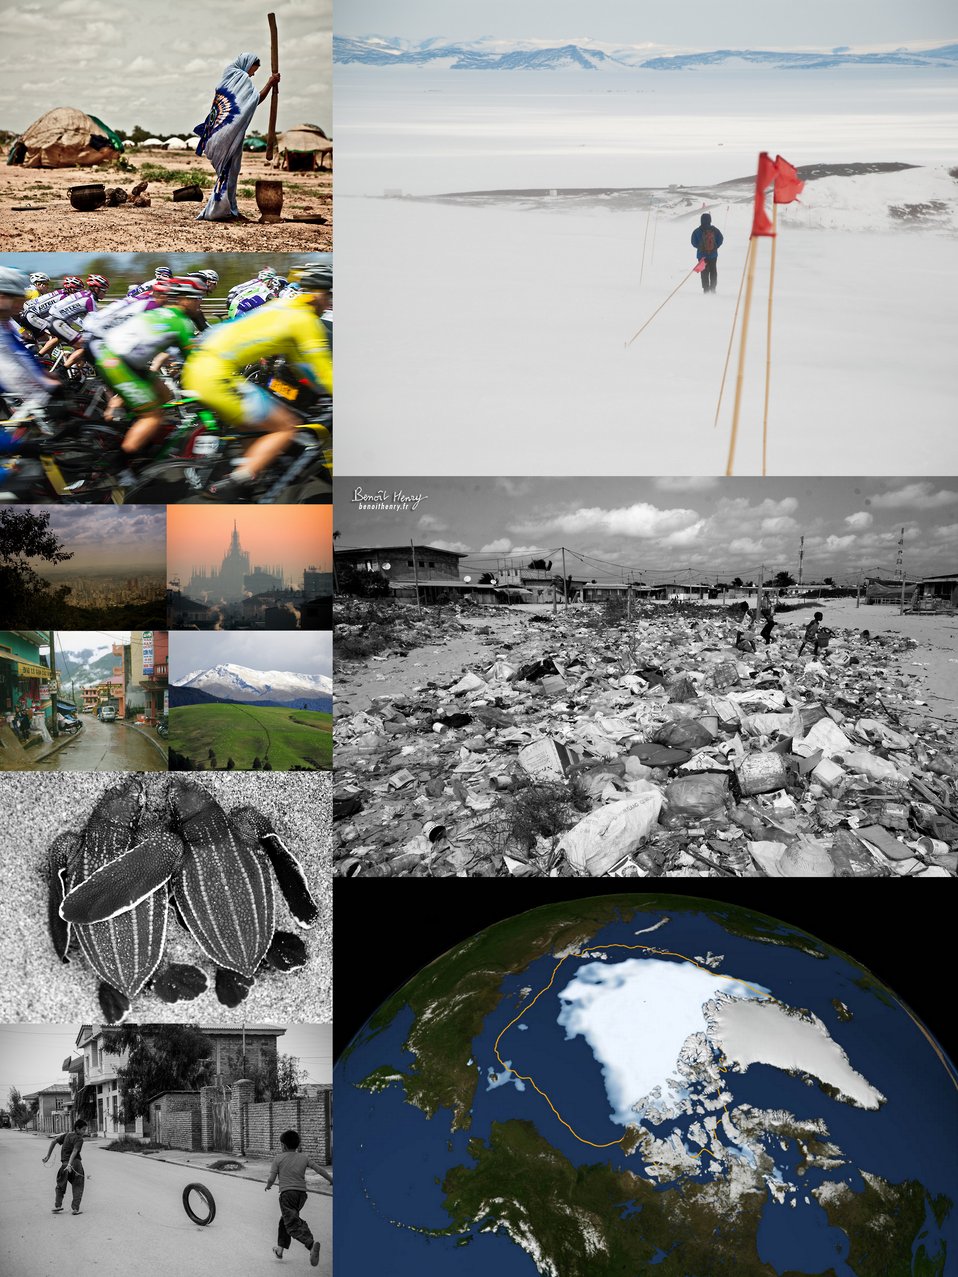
State of the Environment (2010-2013), Global Snapshot 1

This is the first in a series of images of our environment: as seen and contributed by you.

State of the Environment is collecting global snapshots from phones to satellites, to picture our way of life, challenges, and moments in our environment today.

This is the modern inspiration of EPA's DOCUMERICA Photography Project (1971-1977).

State of the Environment is accepting contributions of your photographs of our lives and environment today at www.flickr.com/groups/ourenvironment

Photo Credits:

Mentao Nord Camp, Burkina Faso, September 21, 2012 by Oxfam International on Flickr
Windy, Antarctica, November 26, 2011 by brookpeterson on Flickr
April 22 Bike Day, Zaandam, North Holland, April 22, 2012 by hajeka on Flickr
Mangabeiras, Belo Horizonte, Brazil, May 14, 2011 by p coraline on Flickr
Milan | skyline, Italy, December 28, 2011 by Seba [ 538.it ] on Flickr
Children looking for toys, Port Gentil, Gabon, October 4, 2012 by Benoit Henry on Flickr
Street Scene, Sapa, Vietnam, May 10, 2011 by peggy01b on Flickr
Sheep’s grazing, New Zealand, March 25, 2012 by Vikas Aggarwal on Flickr
You and Me Together, Critically endangered leatherback turtle hatchlings, Trinidad and Tobago, W.I., July 10, 2010 by Tobago Pictures on Flickr
Bandare Turkman, Iran, October 14, 2011 by M.Pantoufle on Flickr
Arctic Sea Ice Shrinks to New Low in Satellite Era, August 27, 2012 by NASA Goddard Photo and Video on Flickr